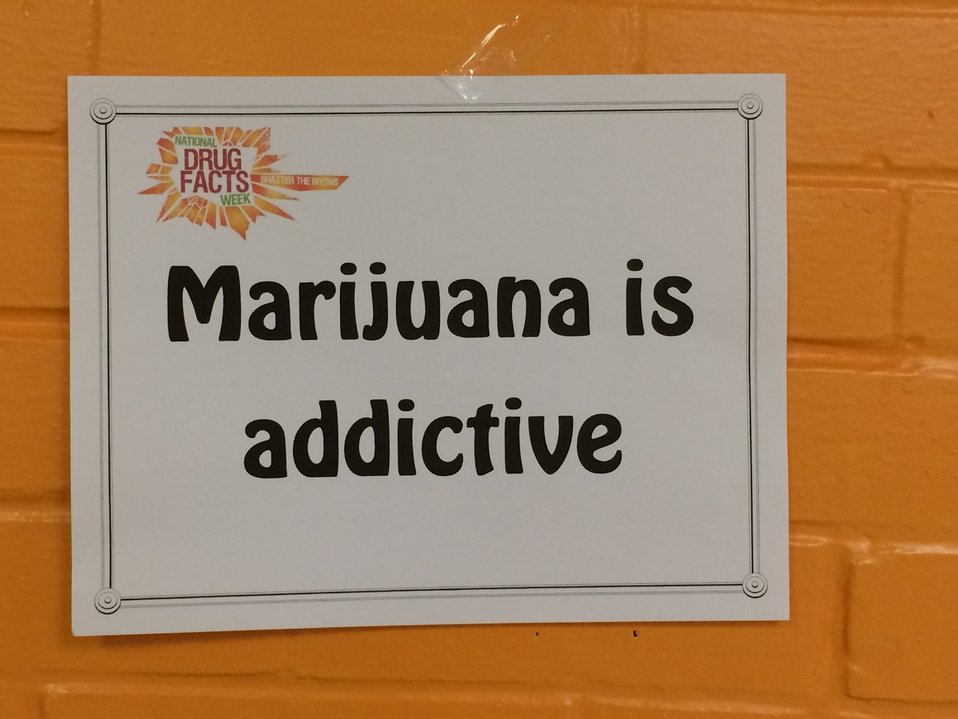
To the Point

Teenagers from the Van Buren County SAFE Coalition's, Youth Leadership Council (YLC) in Keosauqua, Iowa participate in various events during National Drug Facts Week, 2014.